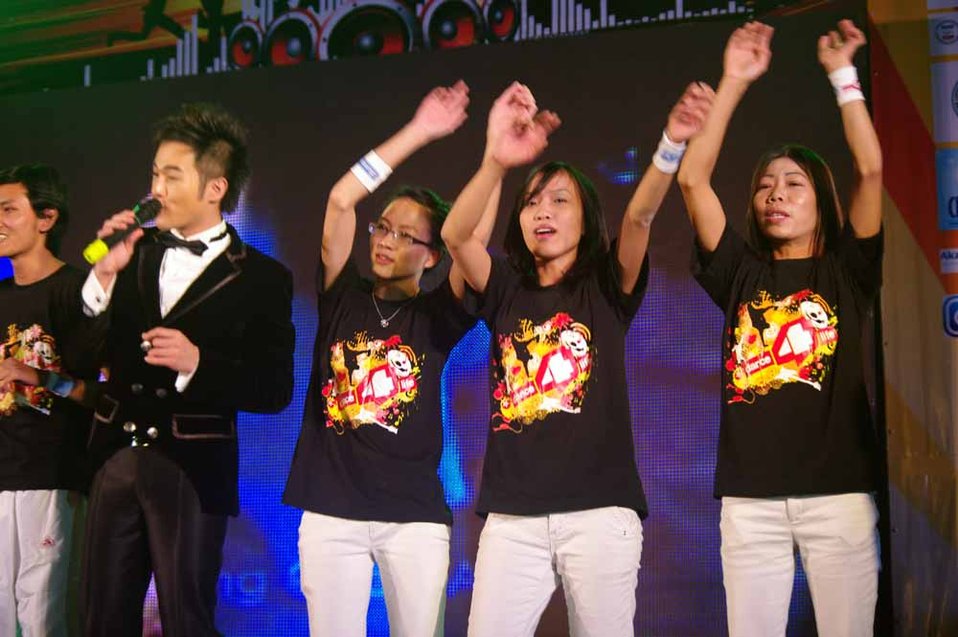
dance4life, Hanoi